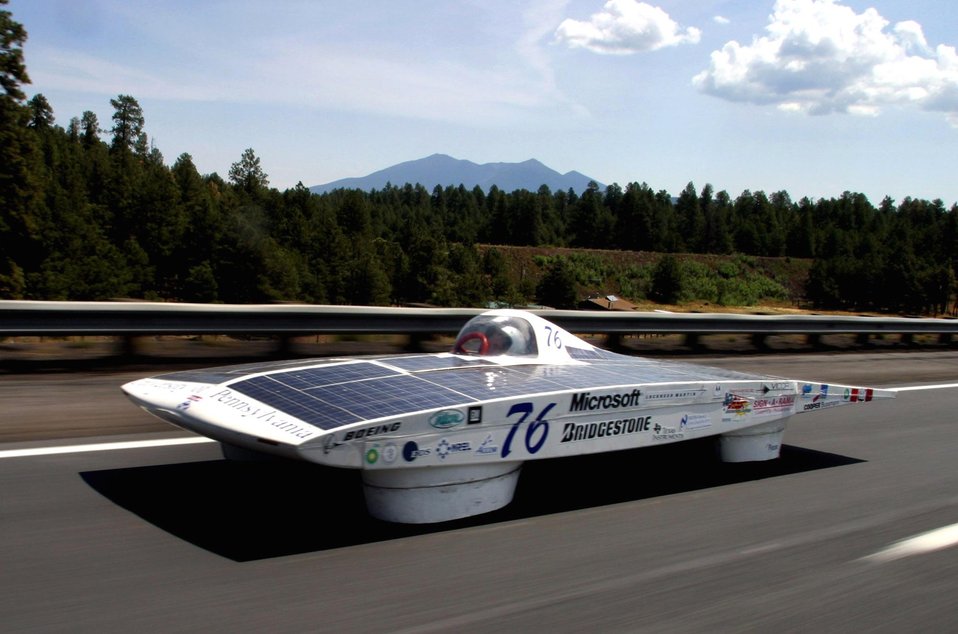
THE UNIVERSITY OF PENNSYLVANIA TEAM RACES TOWARD KINGMAN, ARIZONA DURING THE AMERICAN SOLAR CHALLENGE.

THE AMERICAN SOLAR CHALLENGE, THE LONGEST SOLAR CAR RACE IN THE WORLD, IS A DOE SPONSORED EDUCATIONAL EVENT IN WHICH TEAMS COMPETE TO BUILD AND RACE SOLAR-POWERED CARS. TWENTY UNIVERSITIES PARTICIPATED IN THIS YEAR'S EVENT WHICH STARTED IN CHICAGO, ILLINOIS ON JULY 13 AND FOLLOWED ROUTE 66 FOR 2300 MILES TO CLAREMONT, CALIFORNIA, ENDING ON JULY 23, 2003.